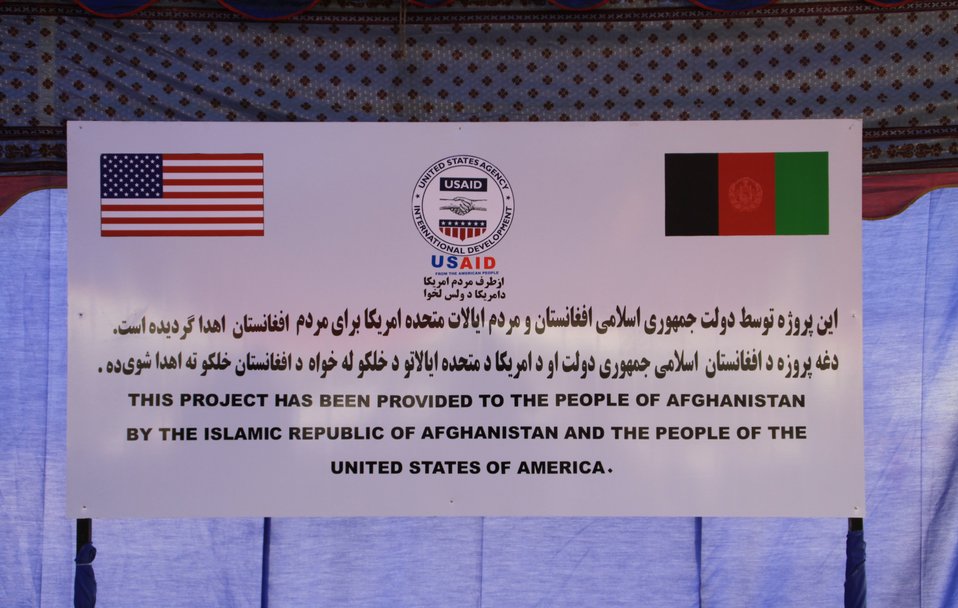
105 MW Tarakhil Power Plant Handover